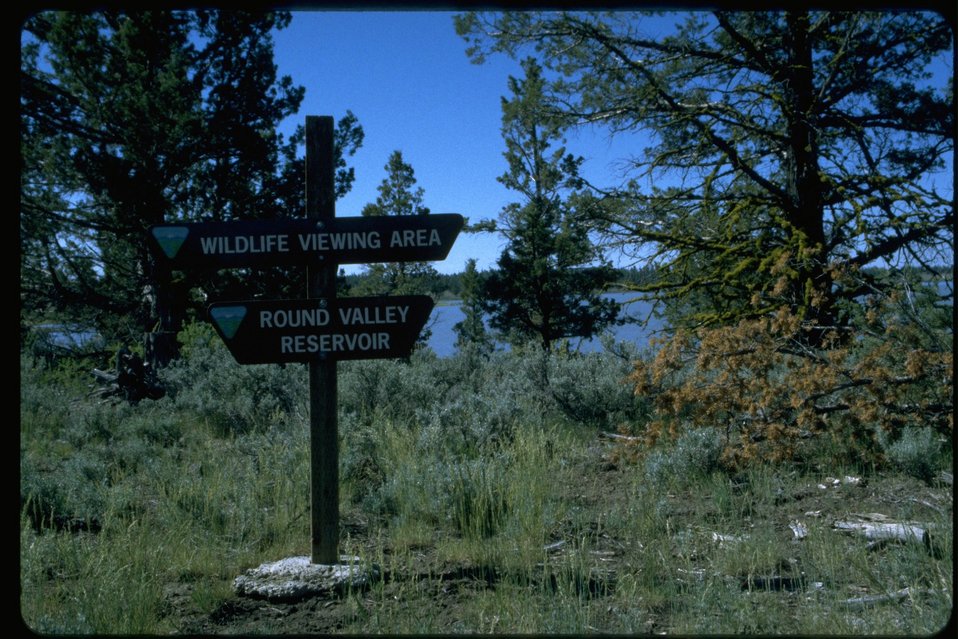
Round Valley Reservoir Watchable Wildlife sign.